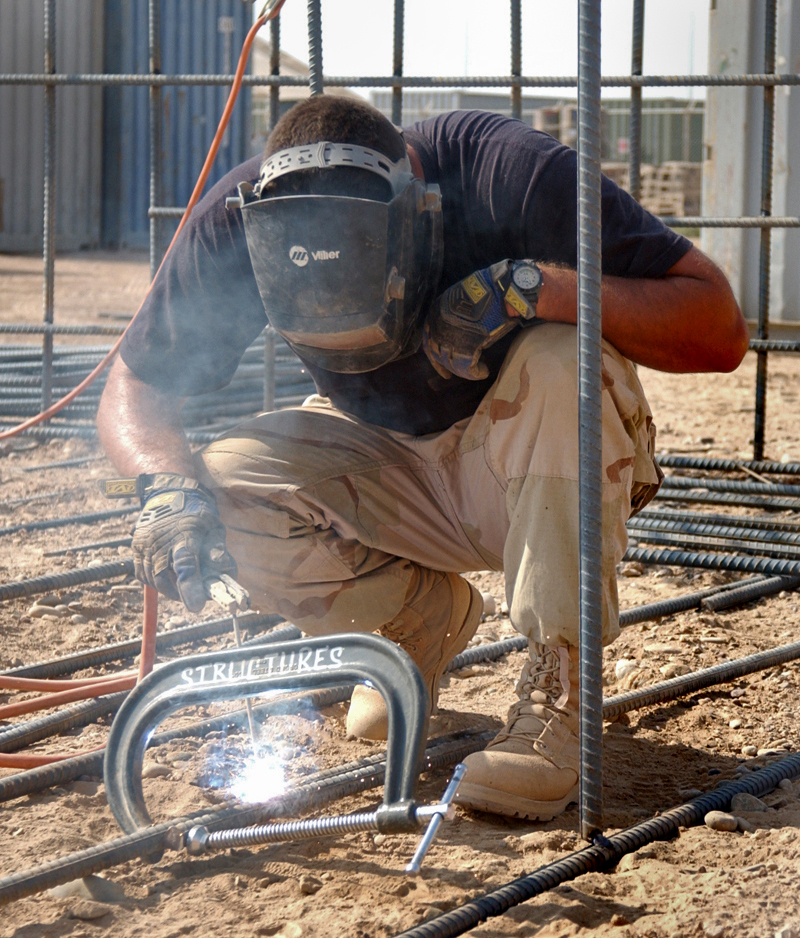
Weld master

BALAD AIR BASE, Iraq -- Staff Sgt. Lance Lewis welds rebar together that will be used for a concrete foundation for a communications tower. The sergeant is part of the 332nd Expeditionary Civil Engineering Squadron here.